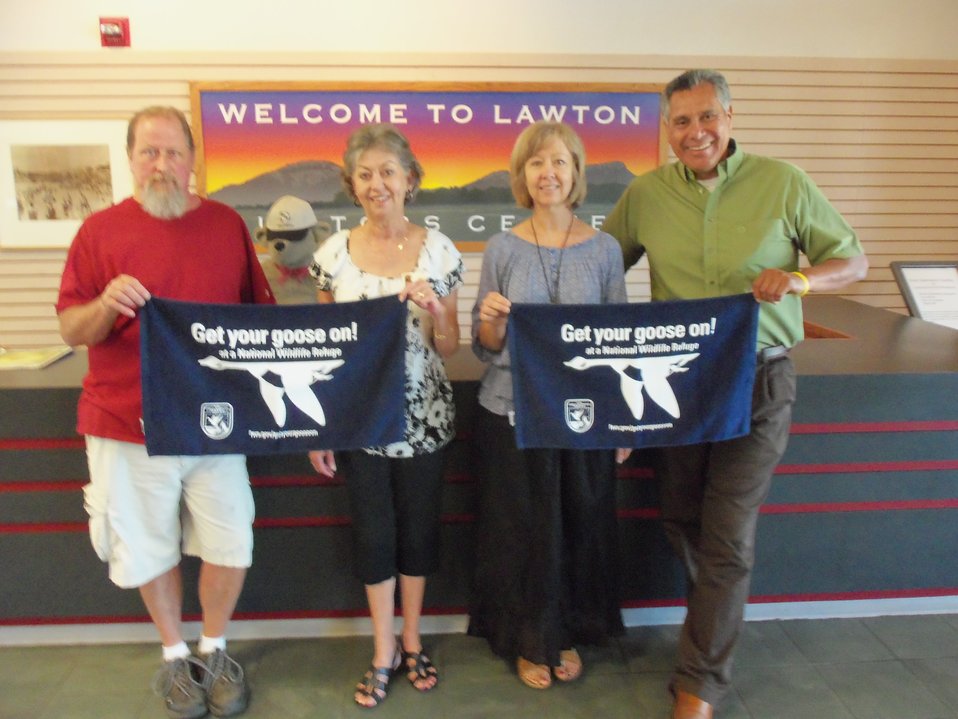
Get Your Goose On!

Wichita Mountains National Wildlife Refuge in Oklahoma.